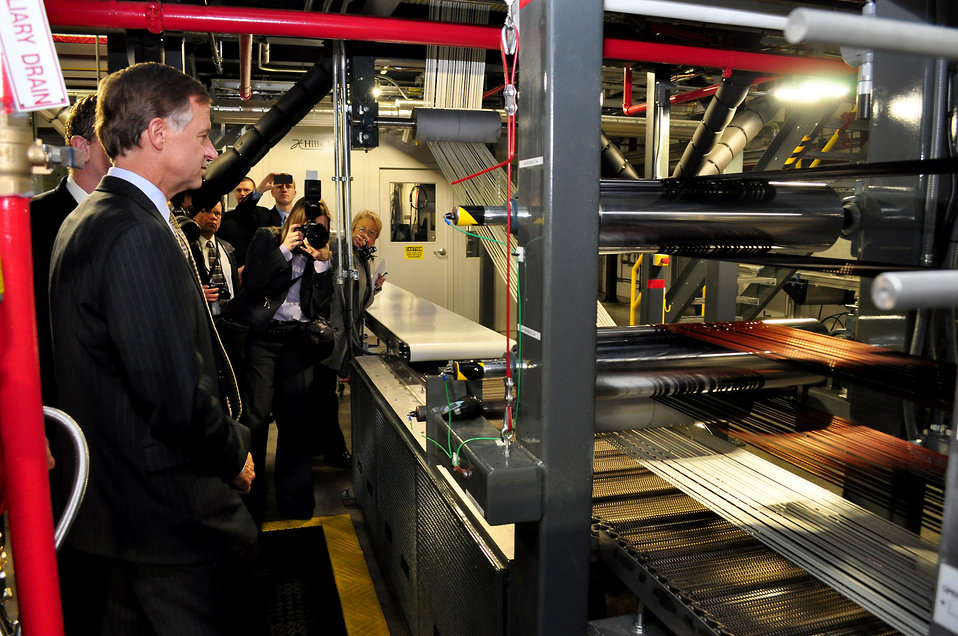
Carbon Fiber Technology Facilty Open House Oak Ridge Tennessee

13-025 DOE photo Lynn Freeny